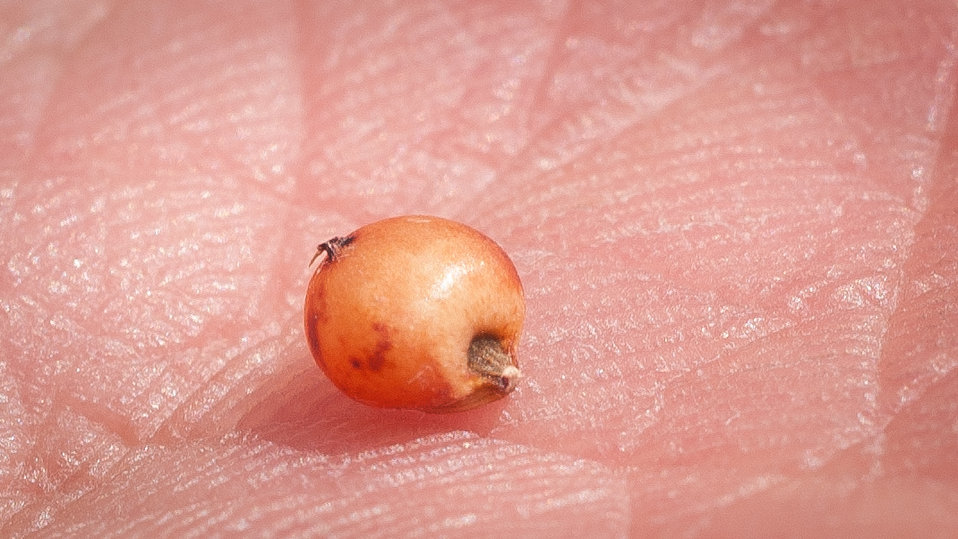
Michael Popp (pronounced Pope) shows the milo (grain sorghum) grown at Popp Farms 05 in El Campo, TX on Jun. 20, 2013. Michael is a junior partner in the 2,400-acre operation that also grows cotton. The farms are part of the United Agricultural Cooperative, Incorporated.